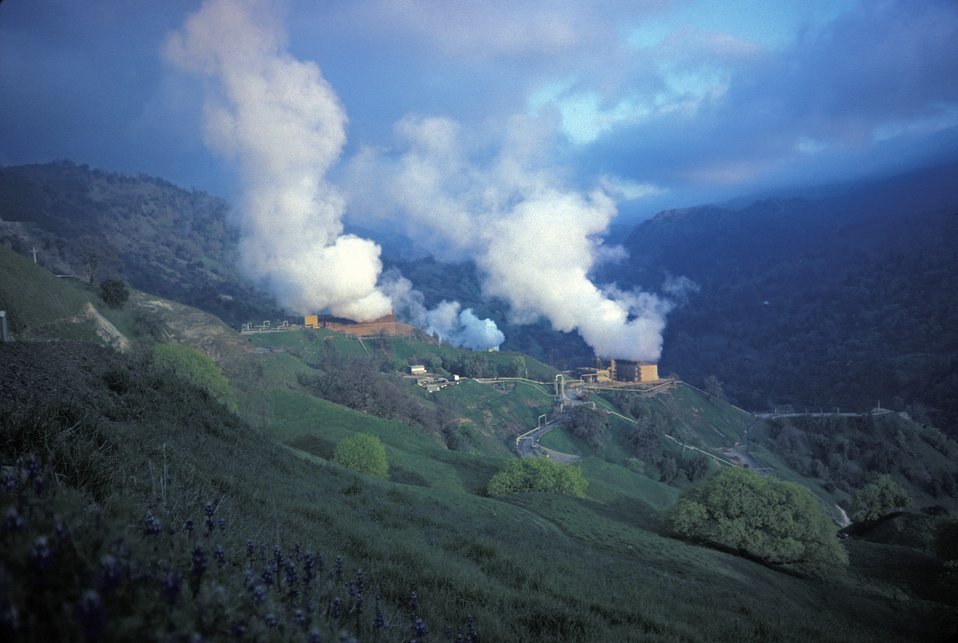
OLD FAITHFUL, THE MOST FAMOUS GEYSER IN YELLOWSTONE.

GEYSERS ARE THE RAREST FOUNTAINS FOUND IN GEOTHERMAL AREAS. WHAT MAKES THEM RARE AND DISTINGUISHED THEM FROM HOT SPRINGS IS THAT SOMEWHERE, USUALLY NEAR THE SURFACE IN THE PLUMBING SYSTEM OF A GEYSER, THERE ARE ONE OR MORE CONSTRUCTIONS. EXPANDING STREAM BUBBLES GENERATED FROM THE RISING HOT WATER BUILD UP BEHIND THESE CONSTRUCTION, ULTIMATELY SQUEEZING THROUGH THE NARROW PASSAGEWAYS AND FORCING THE WATER ABOVE TO OVERFLOW FROM THE GEYSER.